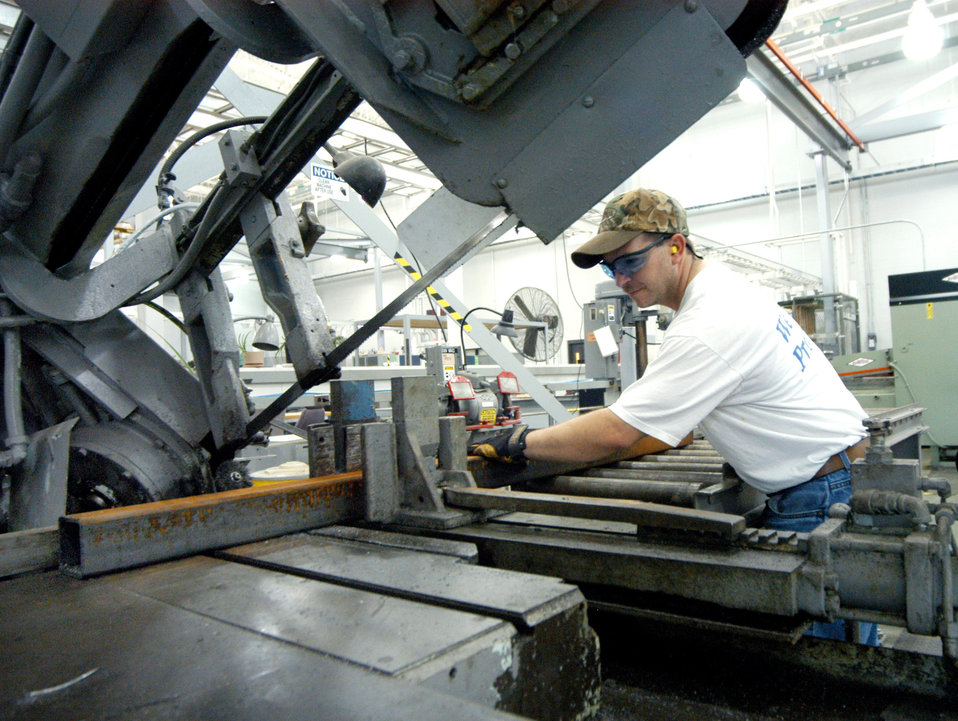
ROBINS AIR FORCE BASE, Ga. -- Ashley Holder slides metal guard-rail tubing onto a saw. Mr. Holder is a millwright, or metal structure mechanic, here.